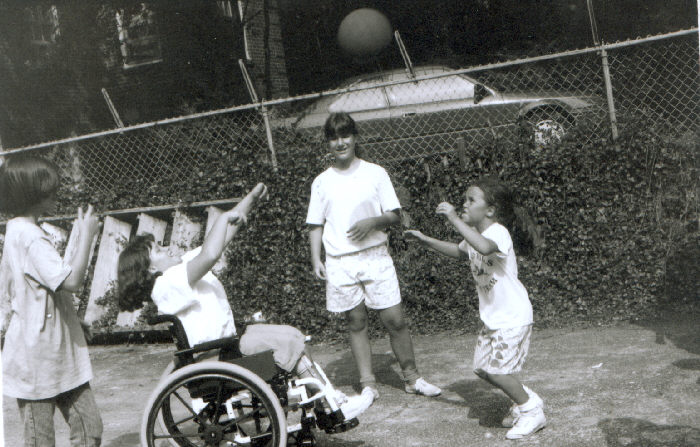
Physically challenged children